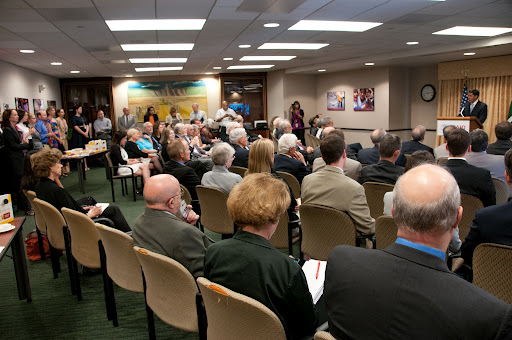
Jonathan Conly

WASHINGTON, D.C. – This week, Jonathan Conly was sworn in as the new U.S. Agency for International Development (USAID) Country Director for Pakistan. USAID Administrator Dr. Rajiv Shah presided over the ceremony and administered the oath in the presence of Mr. Conly’s family, friends, and colleagues, as well as members of the Pakistani-American community and the Pakistan Embassy’s Deputy Chief of Mission, Dr. Asad Majeed Khan.